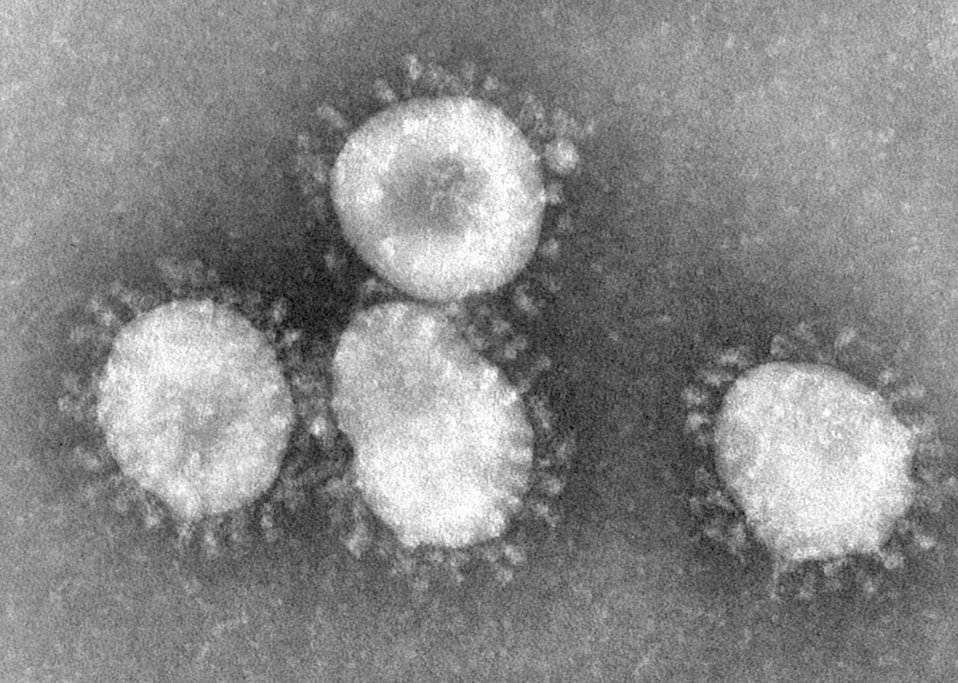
Coronaviruses are a group of viruses that have a halo, or crown-like (corona) appearance when viewed under an electron microscope.